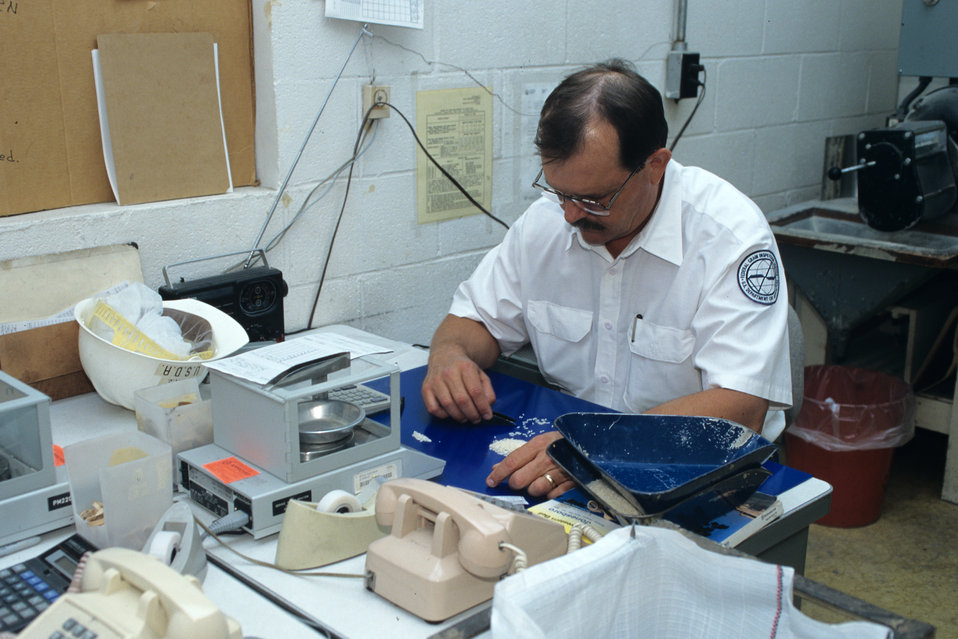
A U.S. Department of Agriculture (USDA) Grain Inspection, Packers and Stockyards Administration (GIPSA) Federal Grain Inspection and Weighing Services (FGIS) agent performs an official inspection on a sample of milled rice at Riceland Foods Incorporated in Jonesboro, AR on Sept. 1, 1996. The FGIS agent is using a grain trier to puncture the bag and collect a representative sample of rice for testing. USDA GIPSA offers inspection services for rice upon request on a fee basis for both domestic and export shipments. Rice inspection services are divided into two basic types: inspection for grade or factor analysis without grade. Inspection for grade involves analyzing the sample according to the quality factors listed in the Official U.S. Standards for Rice and certifying the applicable numeric grade designation, the quality factors responsible for the grade assignment, and any other quality factors the customer requests. Factor analysis involves the analysis of quality factors requested by the applicant for service without the certification of an applicable numeric grade designation. Factors requested by applicants might include free fatty acid, total oil and free fatty acid, stain as a count, broken in brown rice, false smut, and aflatoxin. Official inspections result in the issuance of an official certificate, which reports the grade of the rice. U.S. and international buyers rely on official USDA inspection certificates to provide accurate, official descriptions of the grade, class, and condition of the inspected rice. Official certificates are receivable by all offices and all courts of the United States as prima facie evidence of the truth of the statements stated thereon.